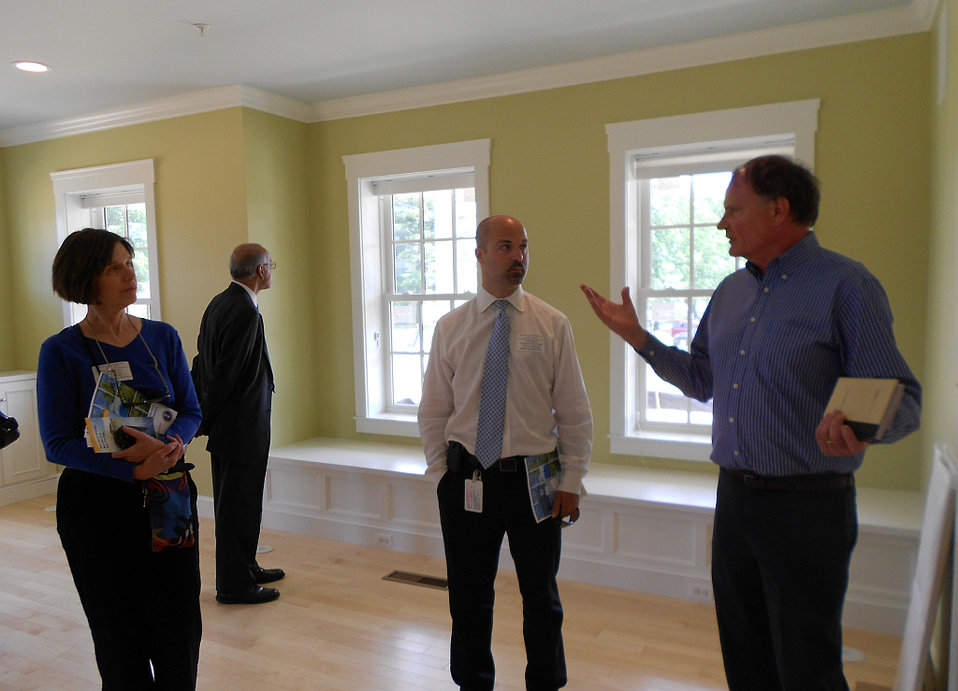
Net Zero Energy Residential Testing Facility Tour

Senate Energy & Natural Resources Committee Staffers Deborah Estes (far left) and Amit Ronen (2nd from right) tour the living room of NIST’s Net Zero Energy Residential Test Facility with Dr. Hunter Fanney (far right) Chief of the Building Environment Lab in NIST’s Engineer Lab (EL) and EL Lab Director Dr. Shyam Sunder (2nd from left).